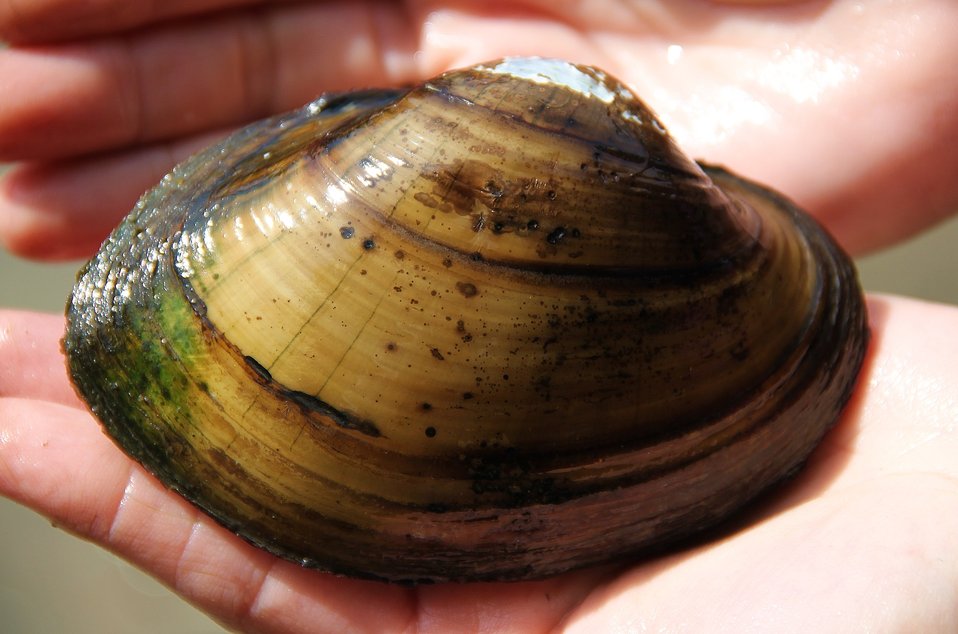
Pocketbook mussel on the Missisquoi NWR